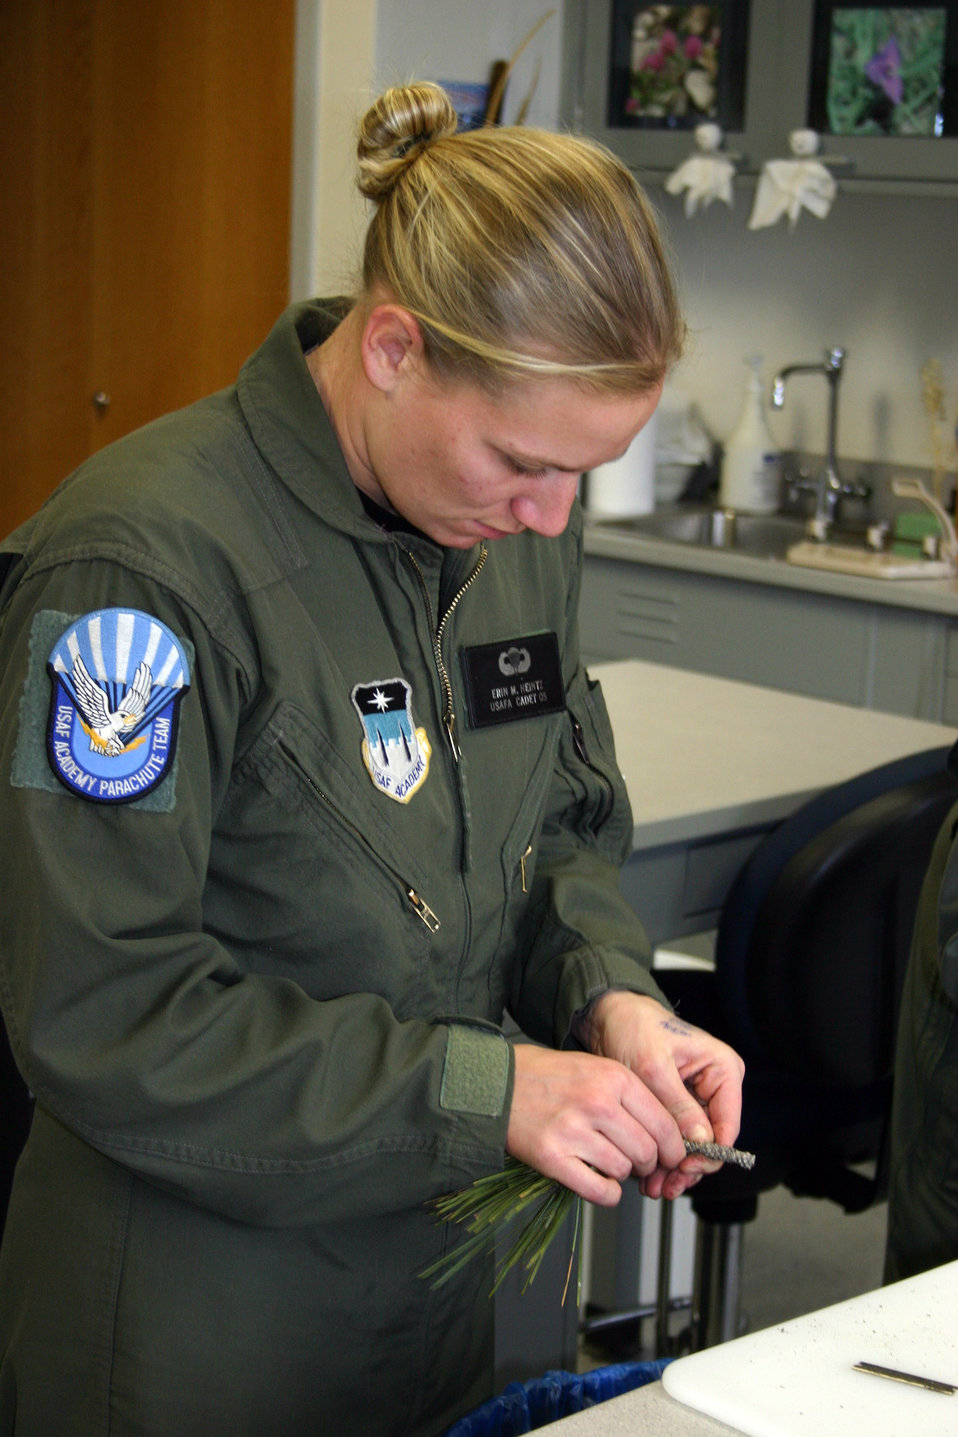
UAVs hunt tree disease

U.S. AIR FORCE ACADEMY, Colo. (AFPN) -- Cadet Erin Heintz works with pine needles in the biology department here. The Air Force Academy Biology Department is working to determine a correlation between the infrared signature and the water potential of the ponderosa pine needle. They can then fly an Unmanned Aerial Vehicle over the local pine trees with a sensor that can detect which trees have been infected by measuring the amount of moisture in the pine needles.